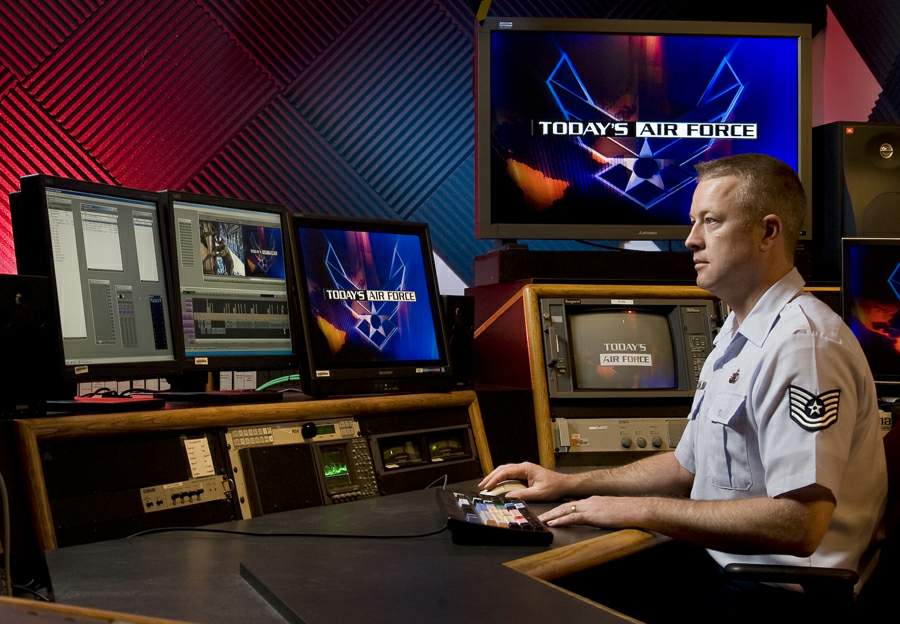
Today's Air Force